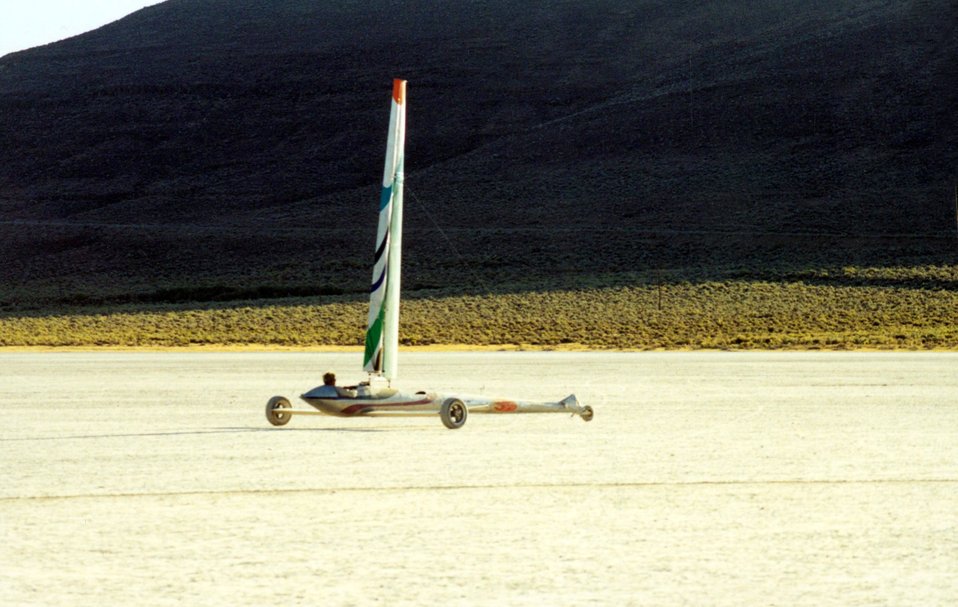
Sand Saling on the Alvord Desert in eastern Oregon.